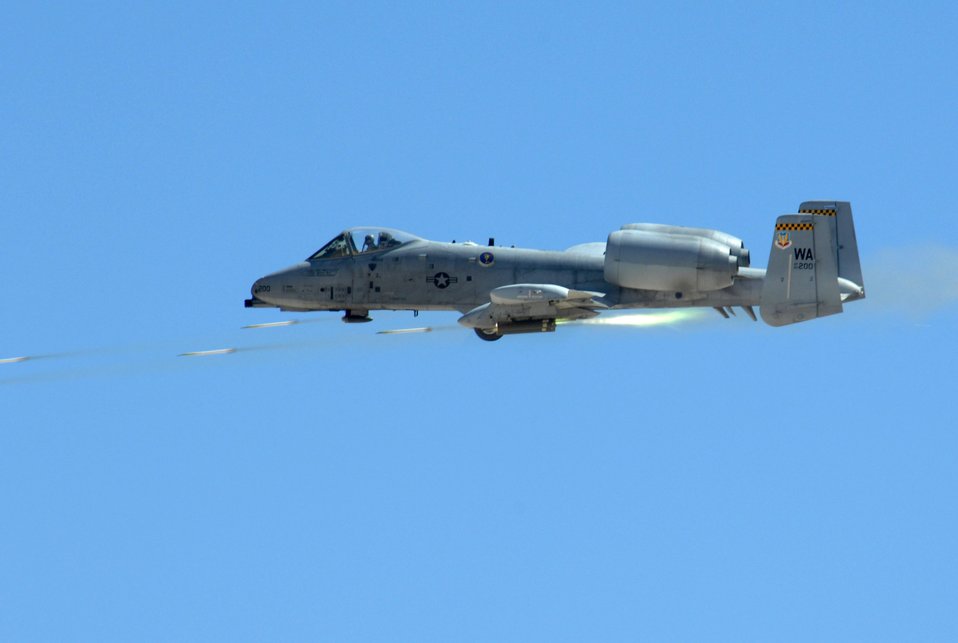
Show of force

An A-10 Thunderbolt II from Nellis Air Force Base Nev., launches AGM-65 Maverick missiles at a simulated hostile target during the fire power demonstration Sept. 14 at the Nevada Test and Training Range. The demonstration gave the general public a close-up and realistic view into the Air Force's ability to perform its wartime mission.